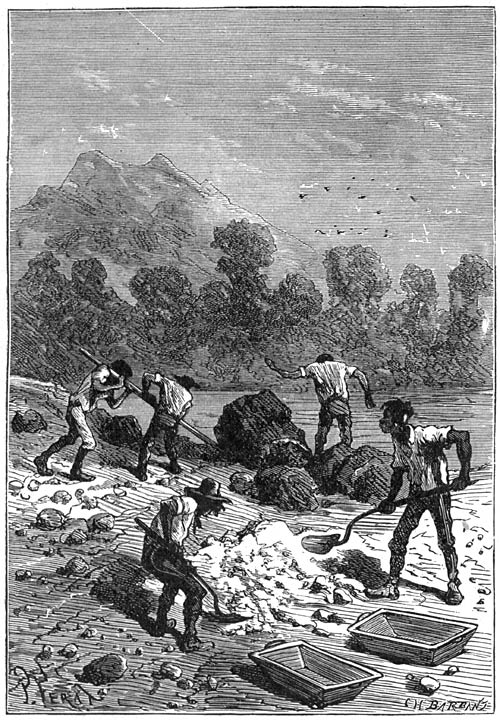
An illustration from Jules Verne's novel 'The Mysterious Island' (1873-74) drawn by Jules Férat. Polski: Ilustracja powieści Juliusza Verne'a 'Tajemnicza wyspa' (tytuł przekładany także jako: Wyspa tajemnicza, 1873-74) autorstwa Julesa Férata. Français : Jules Verne: 'L’Île mystérieuse' (1873-74), dessins par Jules Férat. Orginal description from the book: Français : Les colons furent conviés à ce travail.